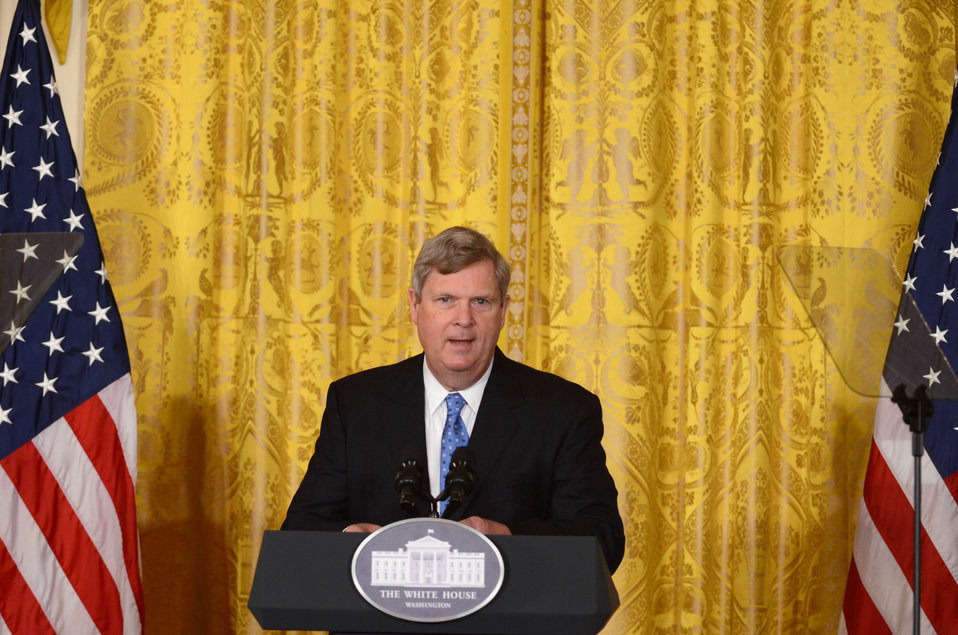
Agriculture Secretary Tom Vilsack announces proposed guidelines for comprehensive school wellness policies and the launching of a new 'School Nutrition Environment and Wellness Resources' website, which includes sample wellness policy language for school districts and a dedicated page of resources for food marketing practices on the school campus in the East Room of the White House in Washington, D.C. on Tuesday, Feb. 25, 2014. The bipartisan Healthy, Hunger-Free Kids Act of 2010 mandated that the U.S. Department of Agriculture (USDA) set guidelines for what needed to be included in local school wellness policies in areas such as setting goals for nutrition education and physical activity, informing parents about content of the policy and implementation, and periodically assessing progress and sharing updates as appropriate. The proposed guidelines would ensure that foods and beverages marketed to children in schools are consistent with the recently released Smart Snacks in School standards and ensuring that unhealthy food is not marketed to children is one of the First Lady's top priorities.